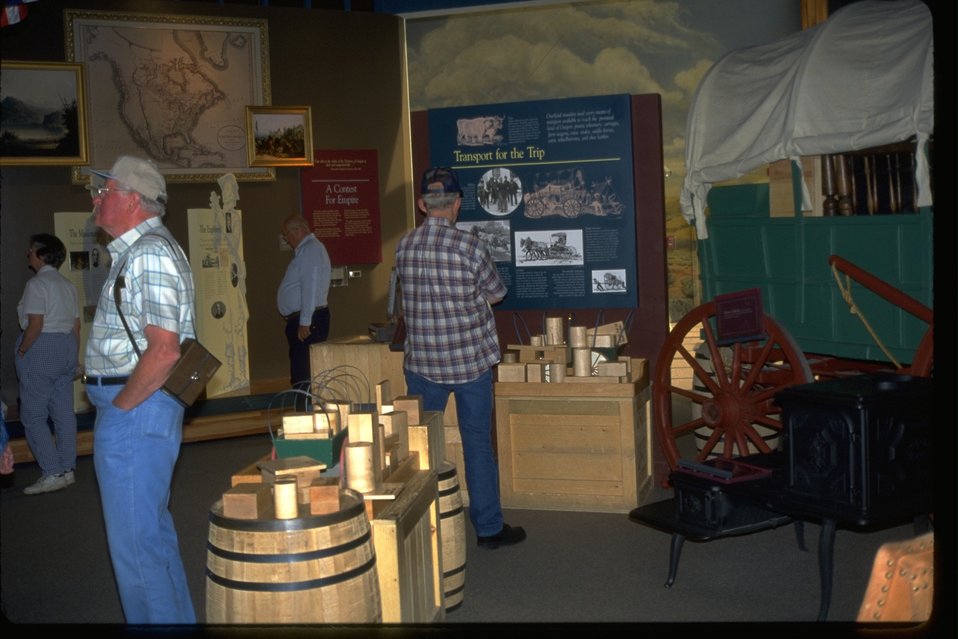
Visitors in exhibits of the NHOTIC.